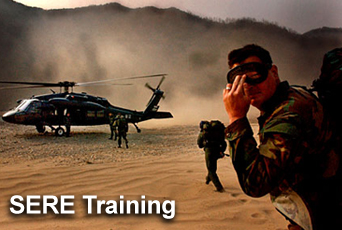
SERE specialists surprise pilot with simulated ejection

Survival, evasion, resistance and escape specialists from Misawa Air Base, Japan, recently gave training to an F-16 Fighting Falcon pilot. The SERE specialist gave the pilot a scenario of ejecting from an aircraft and falling behind enemy lines, but then trained the pilot on what to do.